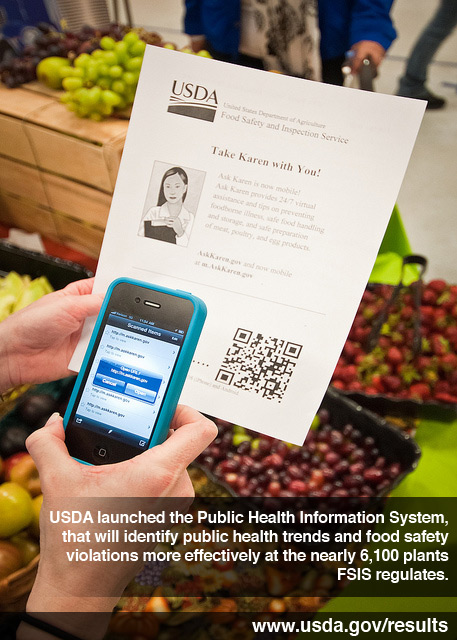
Blog-FoodSafety

“Ask Karen,” an online food safety question and answer service provided by the U.S. Department of Agriculture Food Safety Inspection Service is now mobile app. “Ask Karen” provides 24/7 virtual assistance and tips on preventing foodborne illness, safe food handling, storage and safe preparation of meat, poultry and egg products.